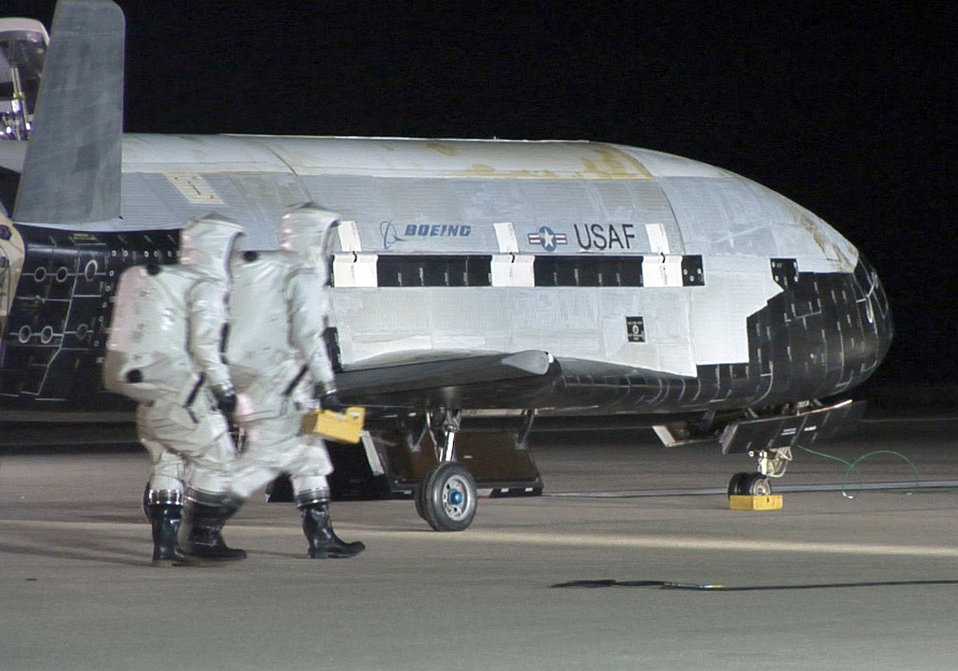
X-37B Orbital Test Vehicle 1

The X-37B Orbital Test Vehicle sits on the runway during post-landing operations Dec. 3, 2010, at Vandenberg Air Force Base, Calif. Technicians in self-contained atmospheric protective ensemble suits conducted initial checks on the vehicle and to ensure the area was safe.